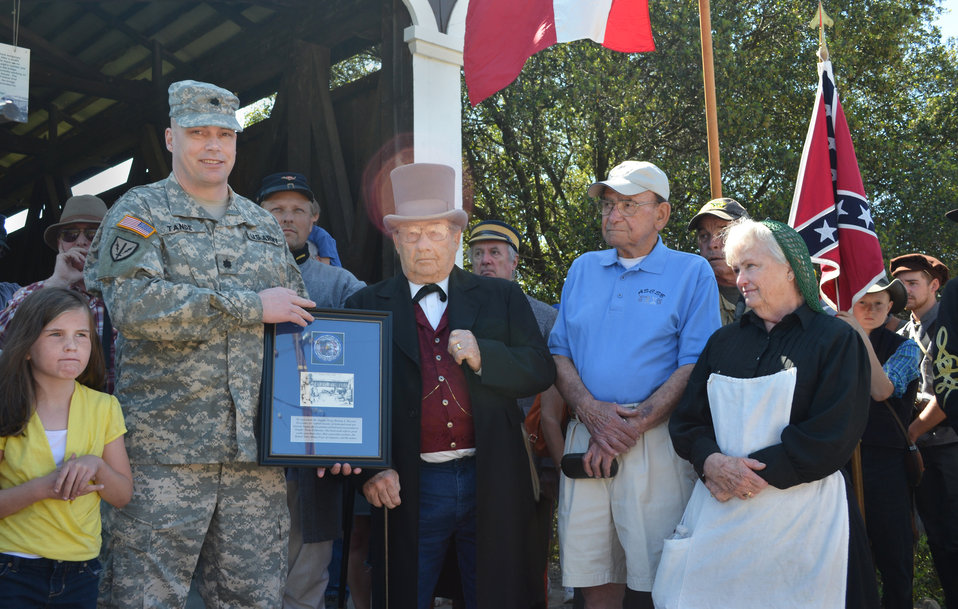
Historic weekend in Knights Ferry

Lt. Col. Chris Tande, a contacting team leader with the U.S. Army Corps of Engineers Sacramento District, presents a token of thanks to members of the Knights Ferry History and Museum Associates for their continued support at the Corps’ Stanislaus River Parks in Knights Ferry, Calif., March 22, 2014. From left to right are Lt. Col. Tande; Lee Shearer, KFHMA vice-president; James McCarthy, and Sherron McCarthy, KFHMA president. Sacramento District employees and hundreds of history buffs gathered in Knights Ferry to officially commemorate attaining National Historic Landmark status for the 300-foot-long covered bridge in the historic 19th-century township.